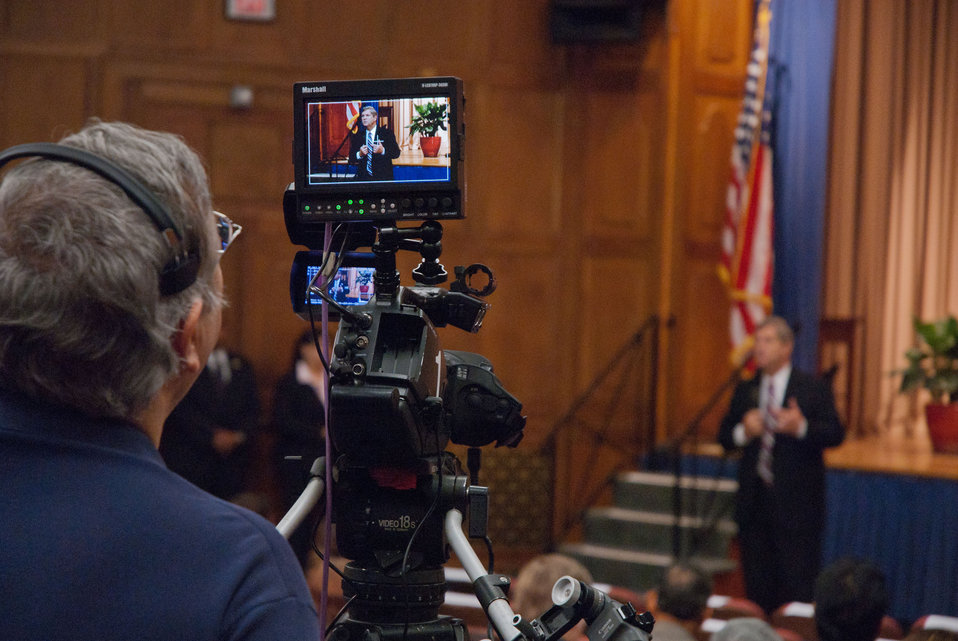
Agriculture Secretary Tom Vilsack took the floor to speak with those in attendance at the National Hispanic Heritage Month observance by the United States Department of Agriculture (USDA), in the Jefferson Auditorium, in Washington, D.C. on Thursday, September 15, 2011.